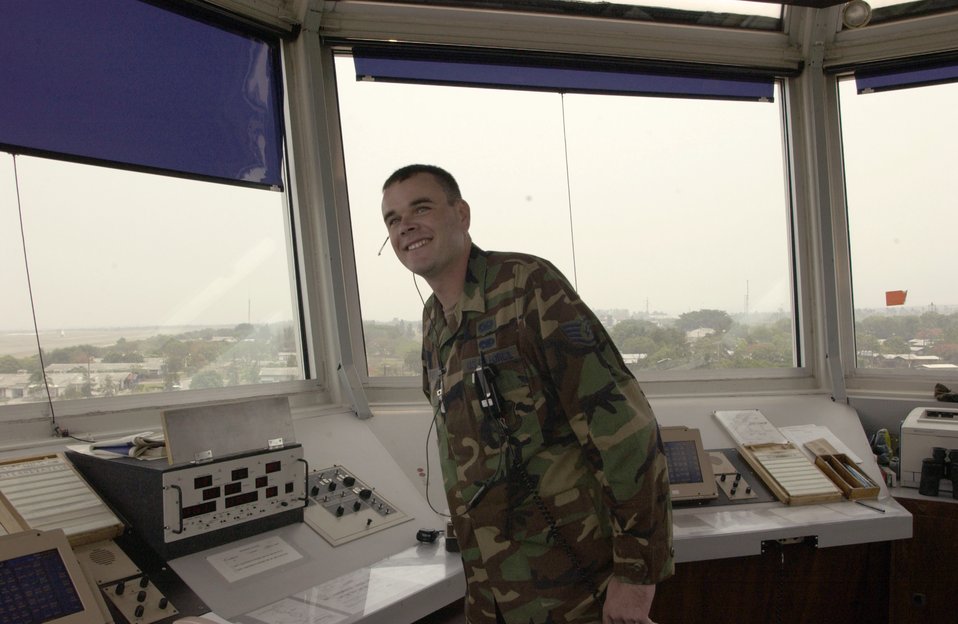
Airmen keep Soto Cano's runway running

SOTO CANO AIR BASE, Honduras -- Staff Sgt. Dennis Kraffert gives an aircraft landing instructions. All air traffic controllers at the base must be bilingual since the task force shares the base with the Honduran air force. Sergeant Kraffert is an air traffic controller with Joint Task Force-Bravo.